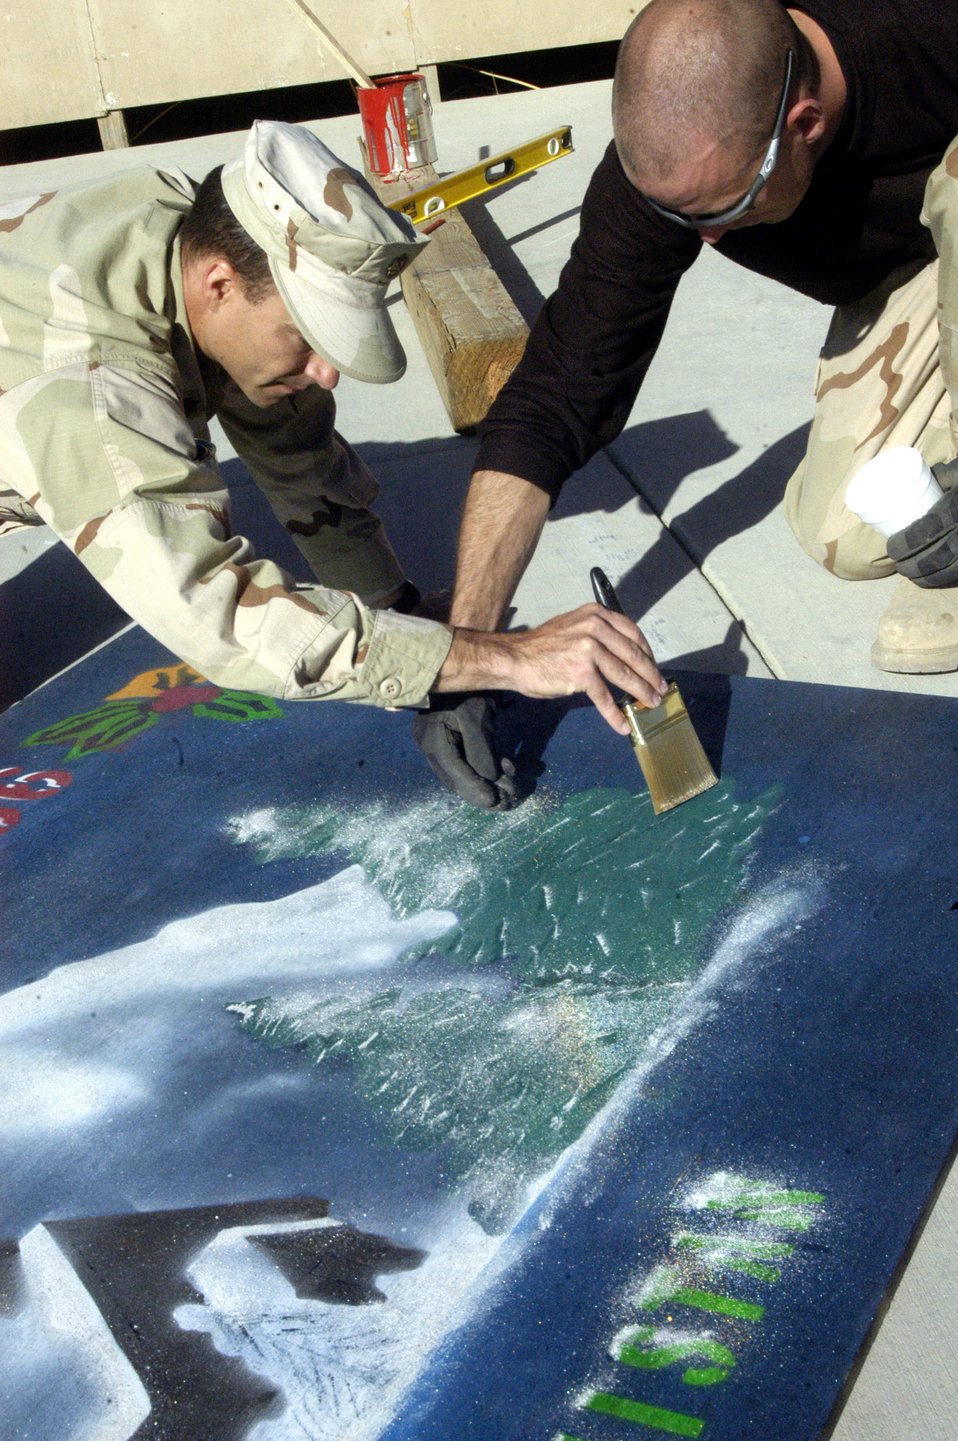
Deployed Airmen prepare for holidays

Maj. Bradley Waters and Senior Airman Stephen Johnson put final touches on a holidays greetings sign the squadron designed for the holidays Nov. 24 at Bagram Air Base, Afghanistan. More than 2,500 Airmen are deployed to Afghanistan in support of Operation Enduring Freedom this holiday season. Major Waters is the 455th Expeditionary Civil Engineer Squadron commander, and Airman Johnson is a 455th CES craftsman.